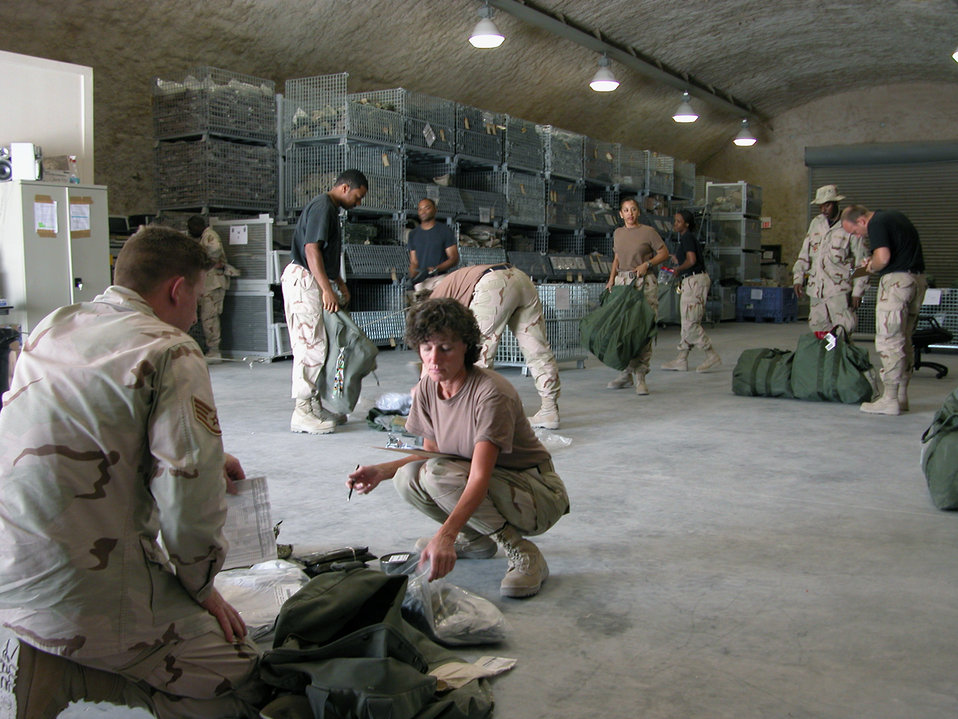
Cost-saving mobility bag test case begins

SOUTHWEST ASIA - Tech. Sgt. Marsie McClarin (right) inventories Staff Sgt. Les Whitehead's mobility gear at a forward-deployed location. Airmen in air and space expeditionary force cycles 3, 4, 5 and 6 can turn in their mobility bags and chemical warfare equipment to theater materiel managers before redeploying. This equipment will be stored at the three expeditionary theater distribution centers located at primary hubs here. Sergeant McClarin is assigned to the 379th Expeditionary Logistics Readiness Squadron, and Sergeant Whitehead is assigned to the 379th Expeditionary Services Squadron.